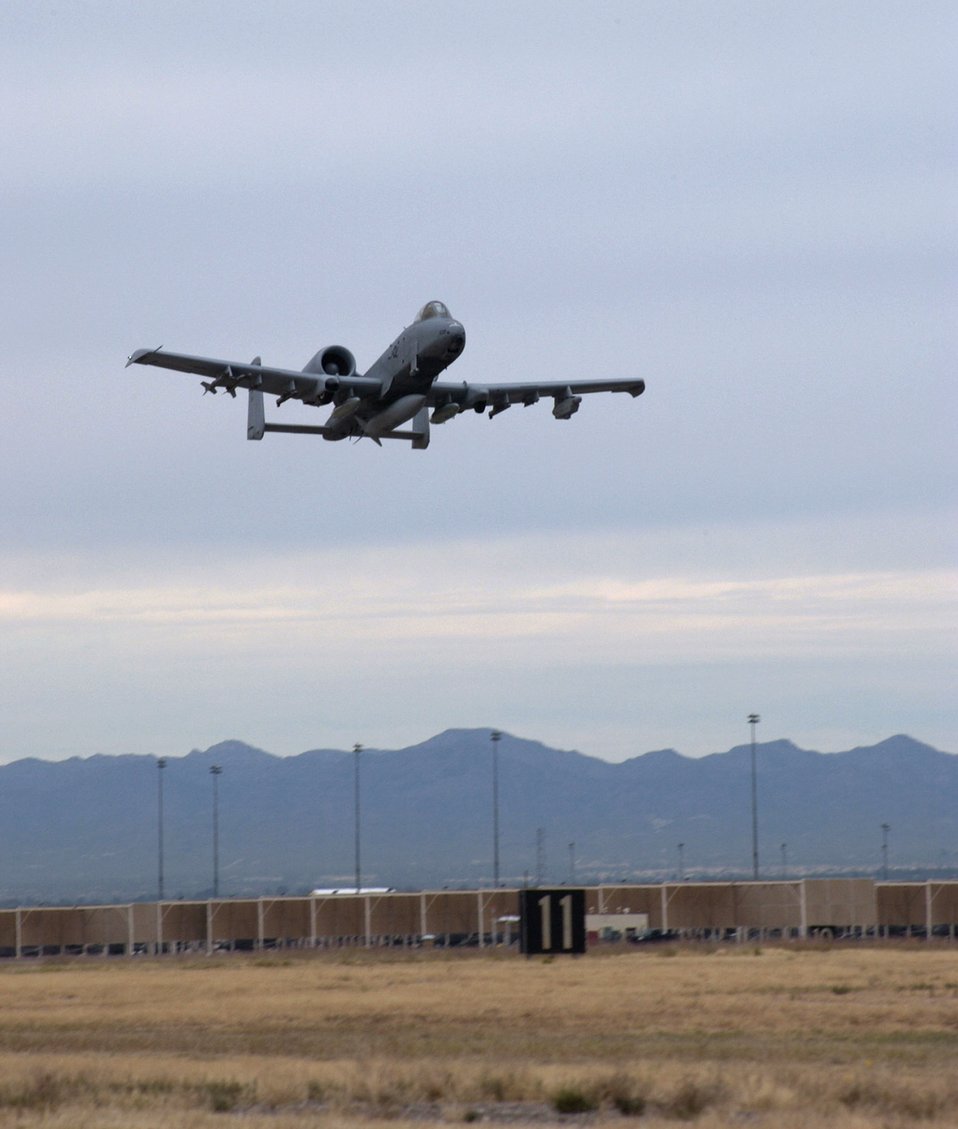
Taking an A-10 from pre-flight to flight

An A-10 Thunderbolt II takes off on a mission Oct. 29th from Davis-Monthan Air Force Base, Ariz.